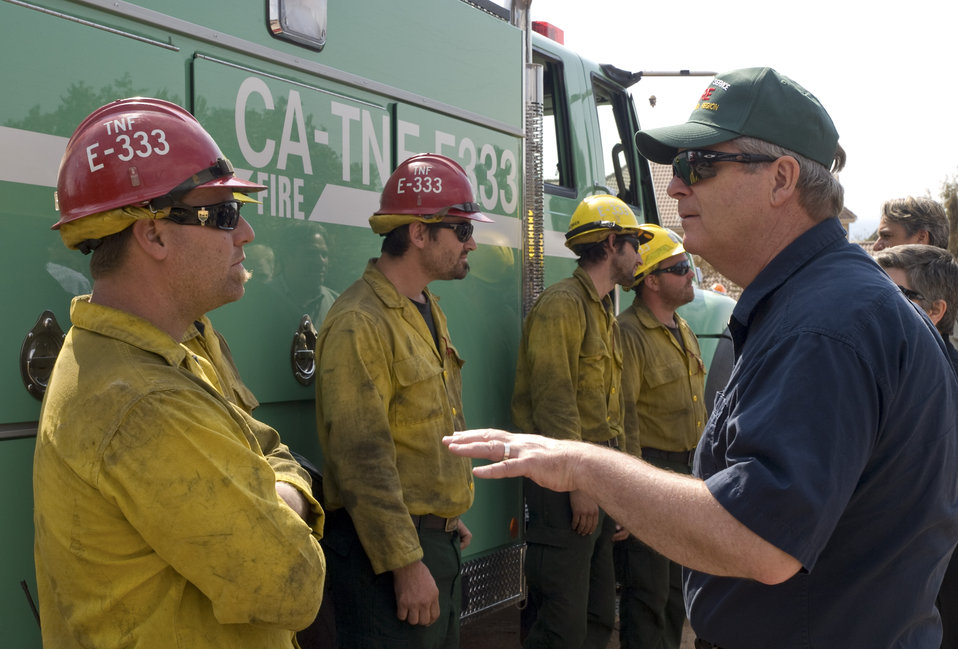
Agriculture Secretary Tom Vilsack (right) talks with a firefighter at the Waldo Canyon Fire near Colorado Springs, CO on Tuesday, July 3, 2012.